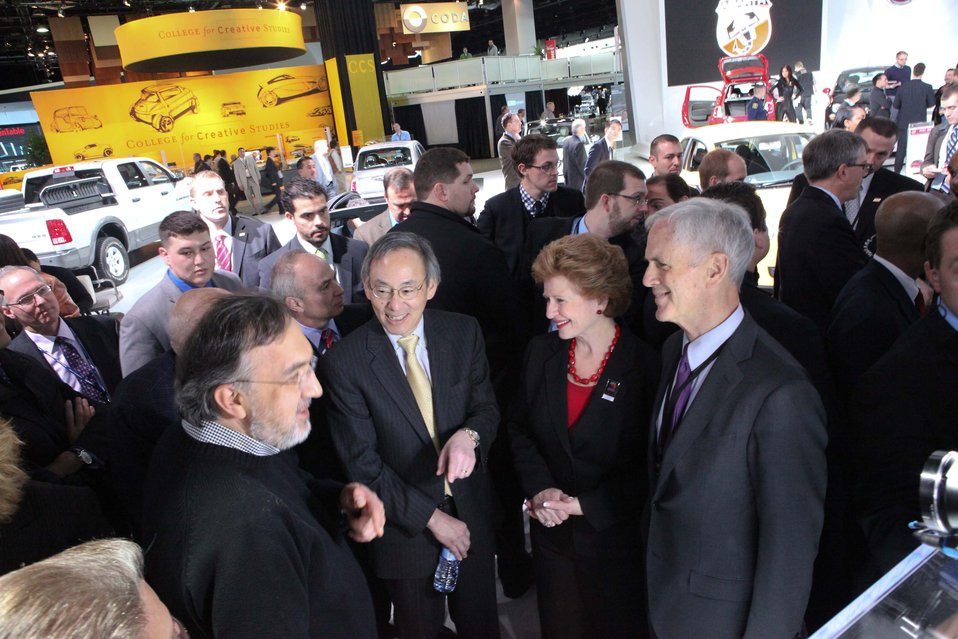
Energy Secretary Steven Chu with Chrysler Chief executive Sergio Marchionne.